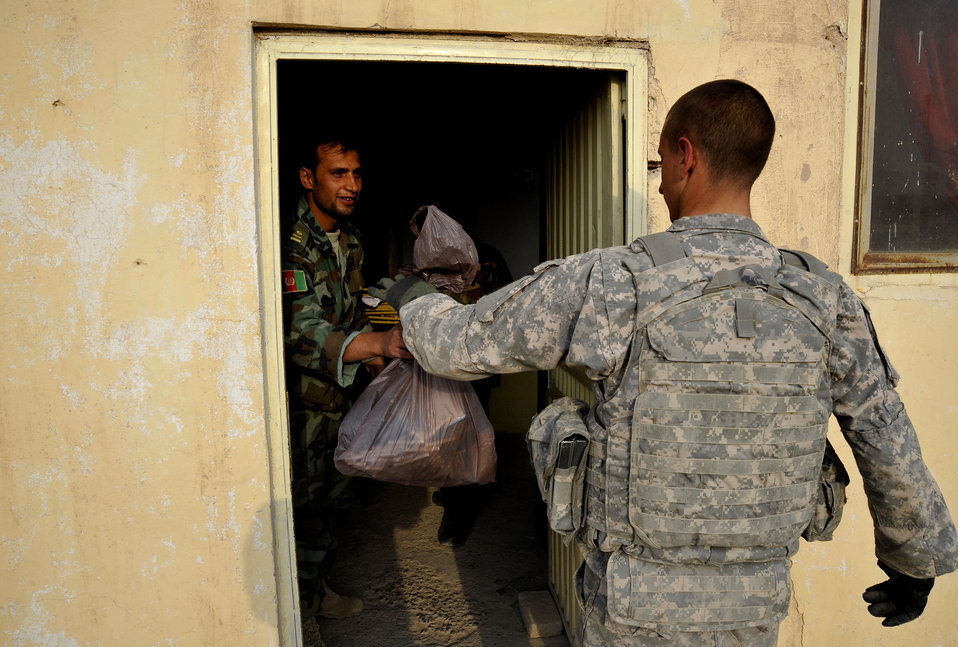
Reconstruction team delivers school supplies to Afghan soldiers

U.S. Army Pfc. James Daws delivers school supplies to Afghan soldiers Oct. 27, 2009, in Qalat, Afghanistan. Private Daws is a security forces member of the Zabul Provincial Reconstruction Team.